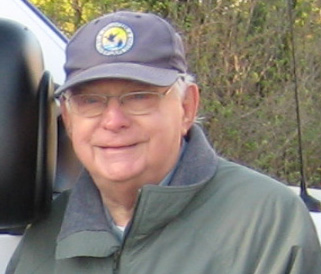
Karl Haller

At age 97, Karl Haller is still conducting bird surveys at Hagerman National Wildlife Refuge in Texas – as he’s been doing every week for the past 50 years. On Thursdays, the popular guide drives a group of “ladies” along the same 23-mile route for birdwatching.